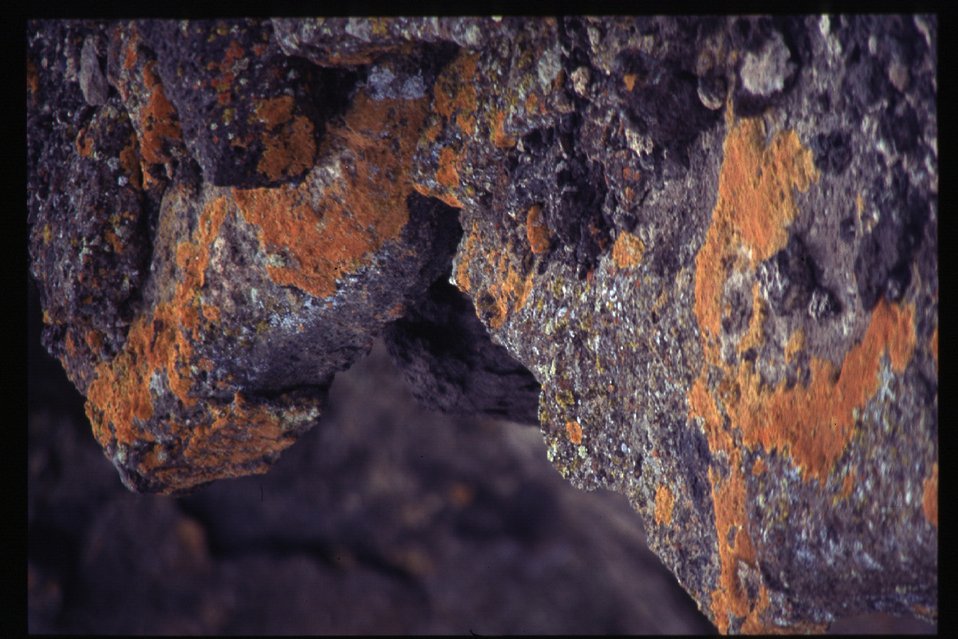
Orange lichen on rocks Snake River Canyon Owyhee Field Office LSRD Lower Snake River District